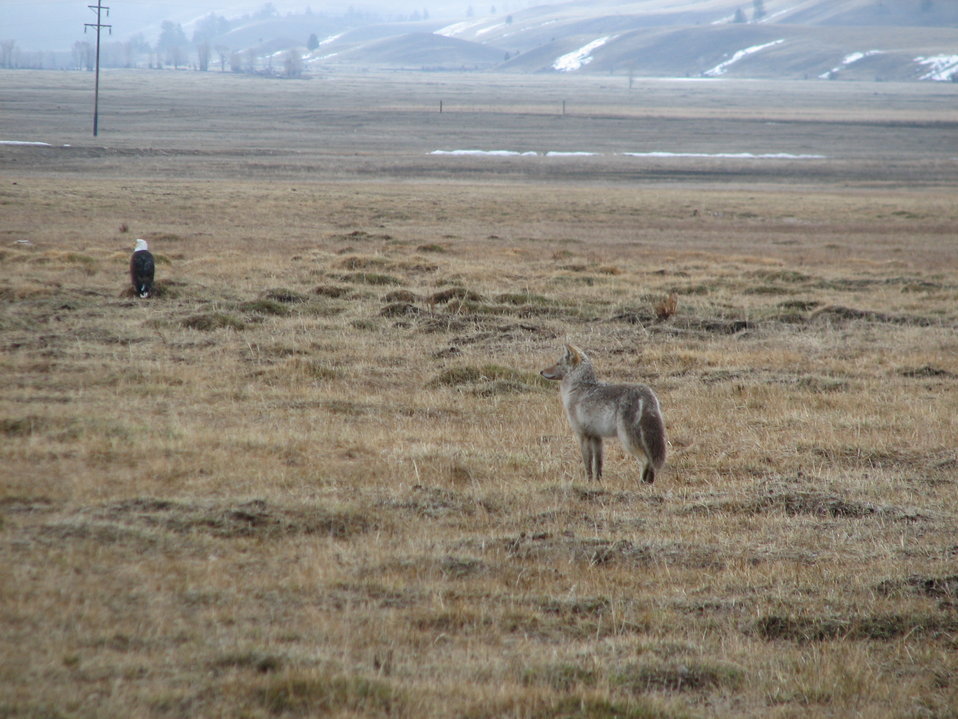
A Pair of Hunters

Both a bald eagle and a coyote stand watch on a spring morning.